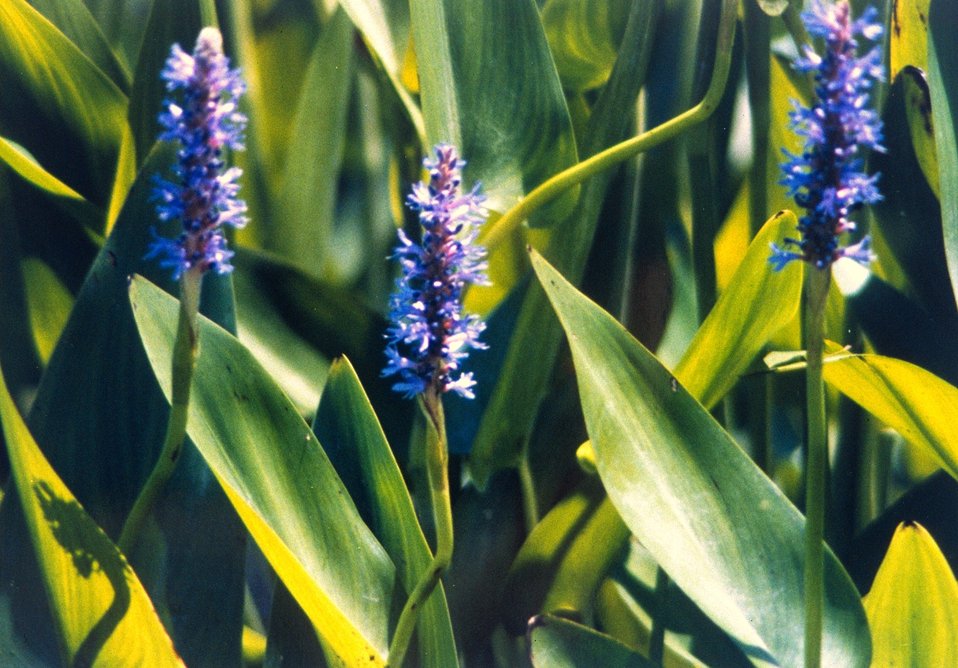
Flowers of the pickerel weed (Pontederia cordata.)